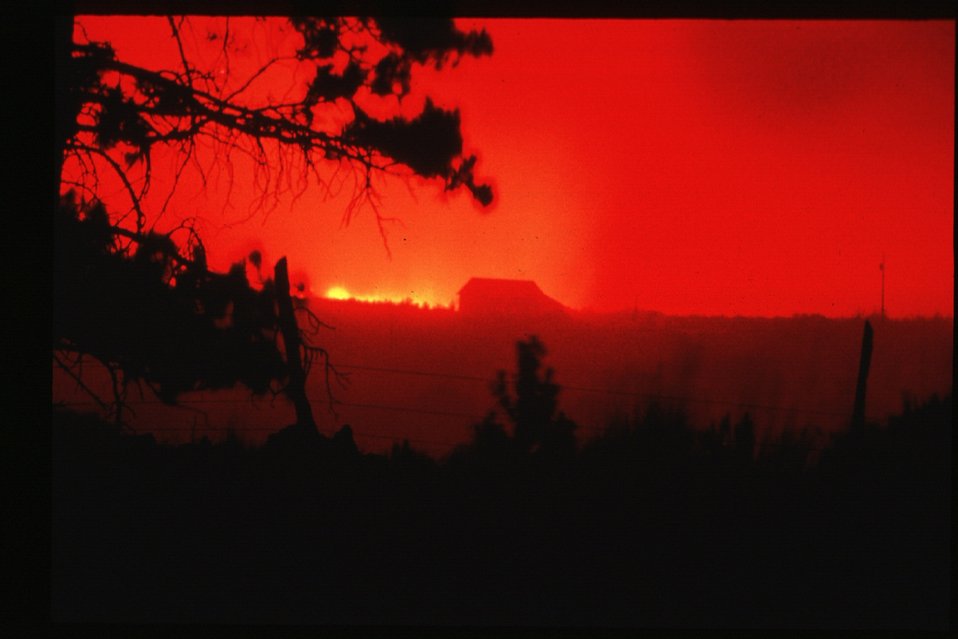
Boise Foothills Fire Danskin Mountains and South Fork of Boise River Four River Field Office LSRD Lower Snake River District